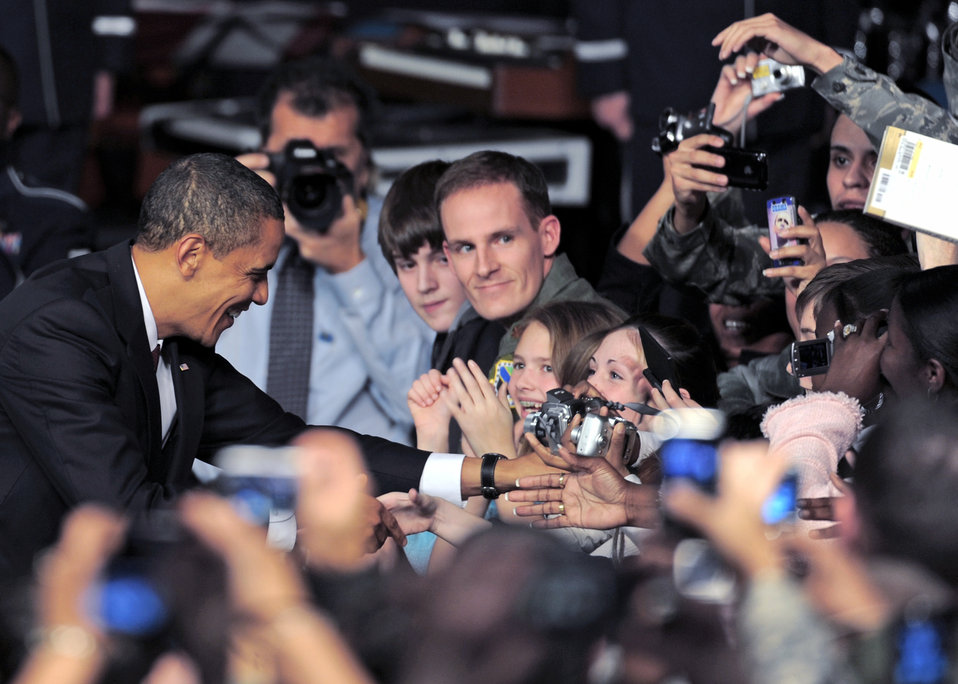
President visits Elmendorf Airmen

President Barack Obama shakes hands with military personnel and civilians during his visit Nov. 12, 2009, to Elmendorf Air Force Base, Alaska. The president was at the base to meet with servicemembers and offer remarks to the local community.